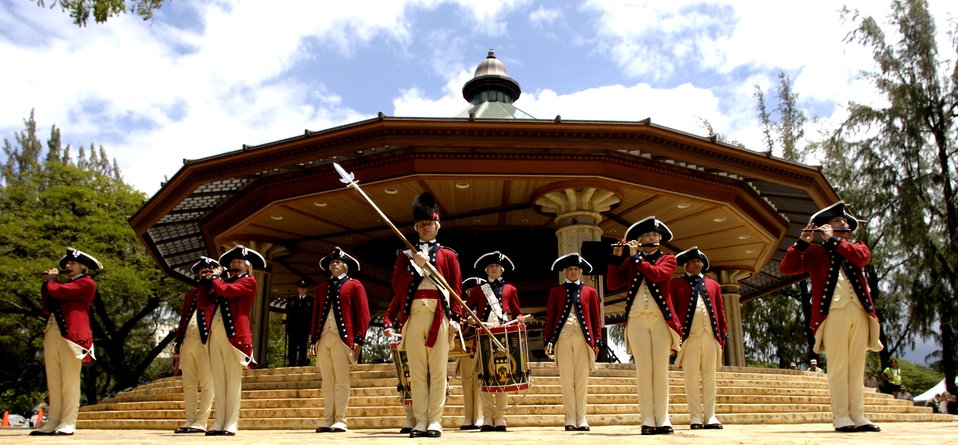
A salute to the troops

Members of the U.S. Army's Old Guard Fife and Drum Corps perform at a concert on Saturday, May 6, 2006, in downtown Honolulu. The group, part of the 3rd United States Infantry Regiment, is the only unit of its kind in the armed forces. The uniforms are patterned after those worn by the musicians in George Washington's Continental Army. The performance was part of a USO